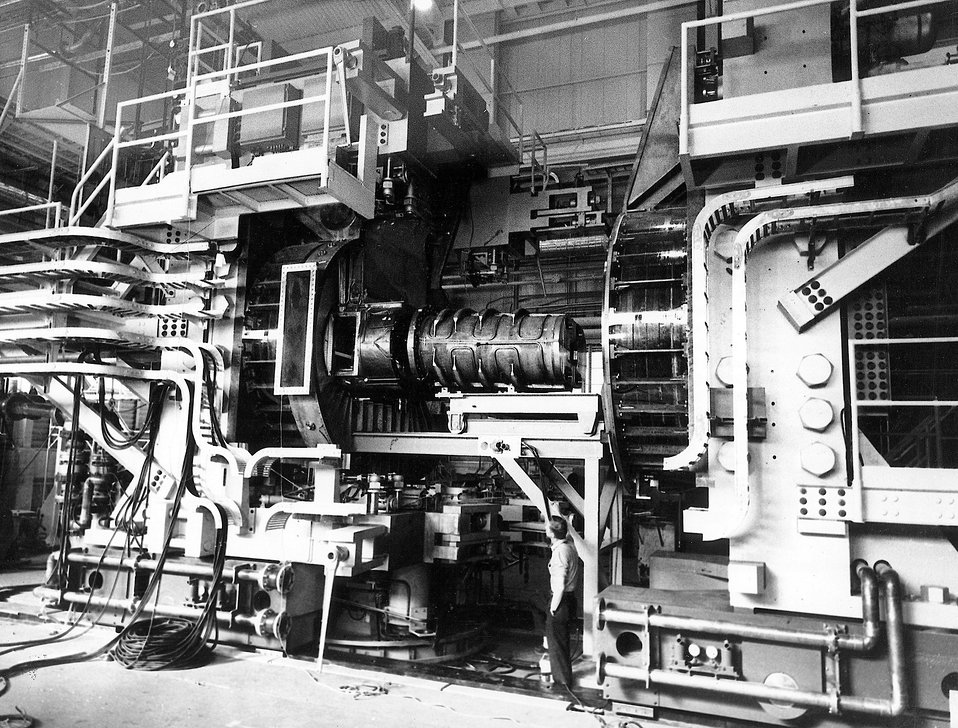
The photograph shows the 80-inch bubble chamber complex partially disassembled. Somewhat to the left of the center of the picture, the bubble chamber itself is visible with the 12' x 25' beam window left open. At the center, in front of the chamber, appears a 'safety chamber' with holes for illumination and photography at the side opposite the bubble chamber. c. 1963